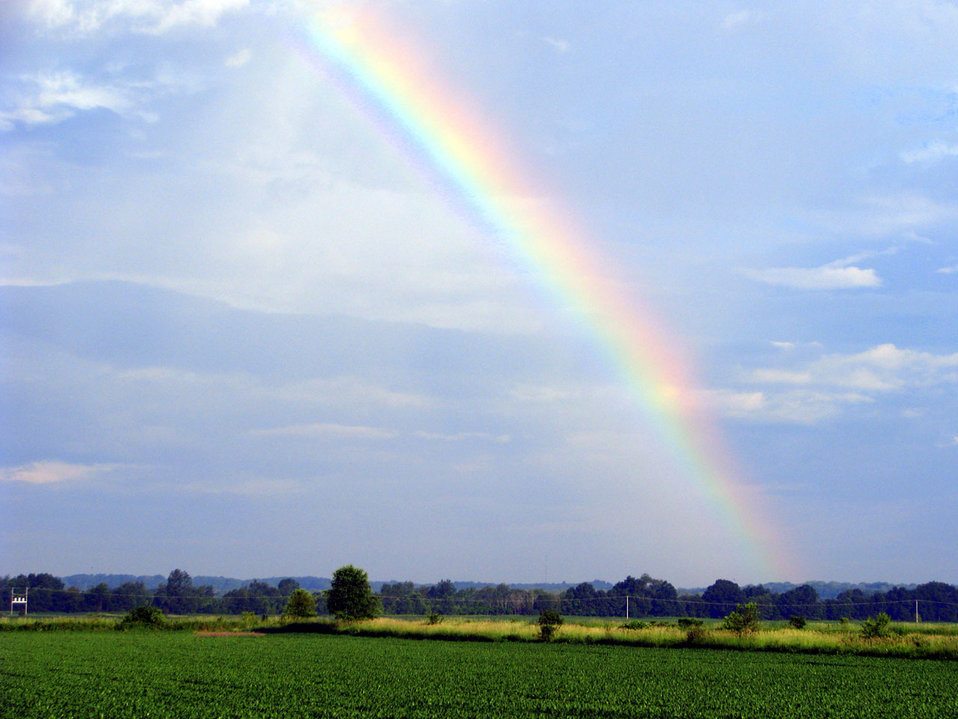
Somewhere over the rainbow

Taken in plainwell, michigan first day of summer.